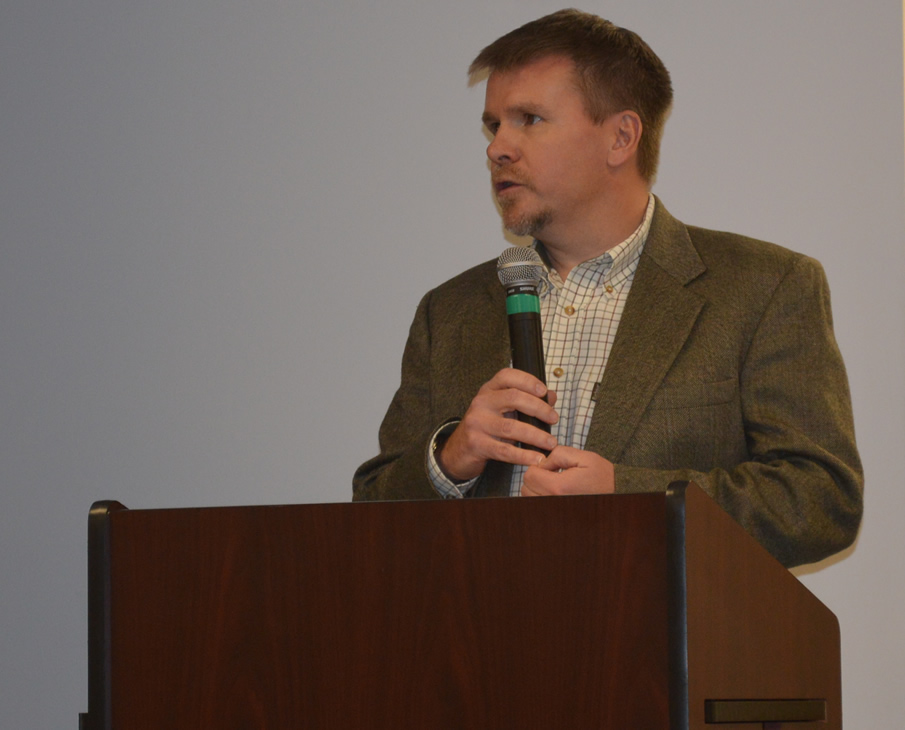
Regional Director Steve Guertin Moves on to Senior Leadership Position

On November 1, 2012, USFWS Mountain-Prairie Regional Director, Steve Guertin, served his last day as Regional Director before moving on to a senior leadership position at Headquarters.

Regional leadership and partners shared their memories of Steve's outstanding leadership and his unique ability to leverage his outstanding technical skills while maintaining a very personable persona - all amidst a variety of challenging issues.